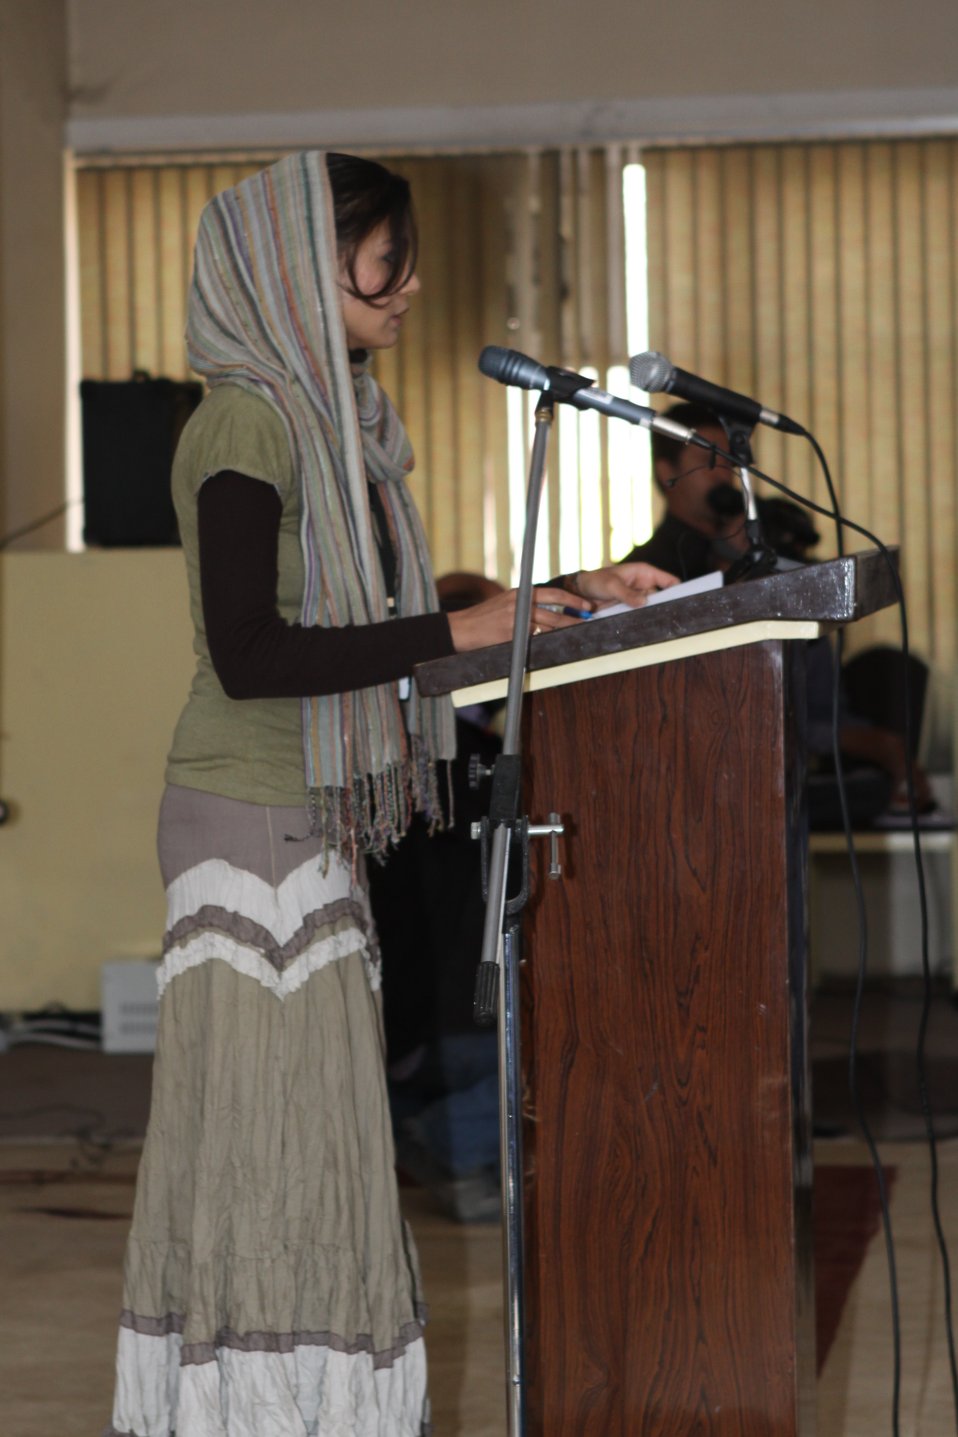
Female University Students Complete Internship

Kabul, Afghanistan | March 16, 2011 – In response to a demand for qualified Afghan engineers, Kabul University celebrated completion of an intensive five-month Mentor Protégé Training Program today by 10 female fourth year university students. The Training Program is a joint effort between the Government of the Islamic Republic of Afghanistan, the U.S. Agency for International Development (USAID), and the Universities of Kabul, Kandahar, Alberoony in Kapisa, Shiekh Zayed in Khost. The graduation ceremony highlighted collaboration with these national institutions in building the technical skills of young Afghans, made possible by USAID.

Four of the interns are engineers, while the remaining six are from the faculties of computer science, economics, and psychology.

Speaking about the event, H.E. Minister of Public Works Abdul Qudus Hamidi said, “The future of Afghanistan lies in developing the skills of our youth, and the engineering skills of these graduates today represent a small but important step forward for the country.”

Keynote speakers at the ceremony included H.E. Deputy Minister of Higher Education Abdul Rahim; USAID Senior Deputy Mission Director Robert Hellyer; and Chancellor of Kabul University Professor Hamidullah Amin. Approximately 150 people, including current and former students attended the graduation.

Launched last year, the Mentor Protégé Training Program has provided qualifying students the opportunity to intern with USAID’s Strategic Provincial Roads-South and East Afghanistan project and gain practical experience in a real work environment. The goal of the program was to offer interns the opportunity to gain hands-on experience to reinforce their formal studies. A total of 30 students from four national universities have benefitted from this program.

“The promotion of women’s rights is integrated into the overall U.S. Government development strategy and can be found in key programs, including education, healthcare, security, rule of law, political participation, agriculture, and economic development,” said Robert Hellyer. “The U.S. Government is committed to the Afghan leadership of programs that directly enhance development, particularly as it relates to women’s issues.”

This event also highlighted the learning achievements of students and emphasized the importance of hands-on internship programs. The curriculum is designed to instill students with the knowledge and confidence to qualify for engineering positions upon completion of their fourth year at their respective universities.